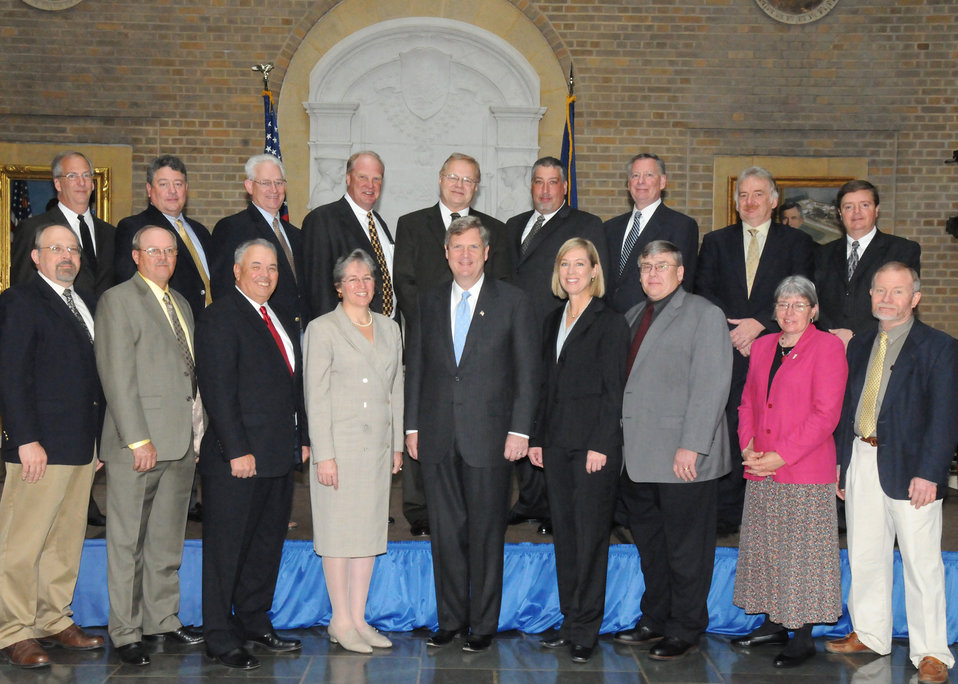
Agriculture Secretary Tom Vilsack poses with 17 members Dairy Industry Advisory Committee (DIAC) at the Department of Agriculture in Washington, D. C., on Tuesday, Apr. 13, 2010. USDA photo 10di1306-03